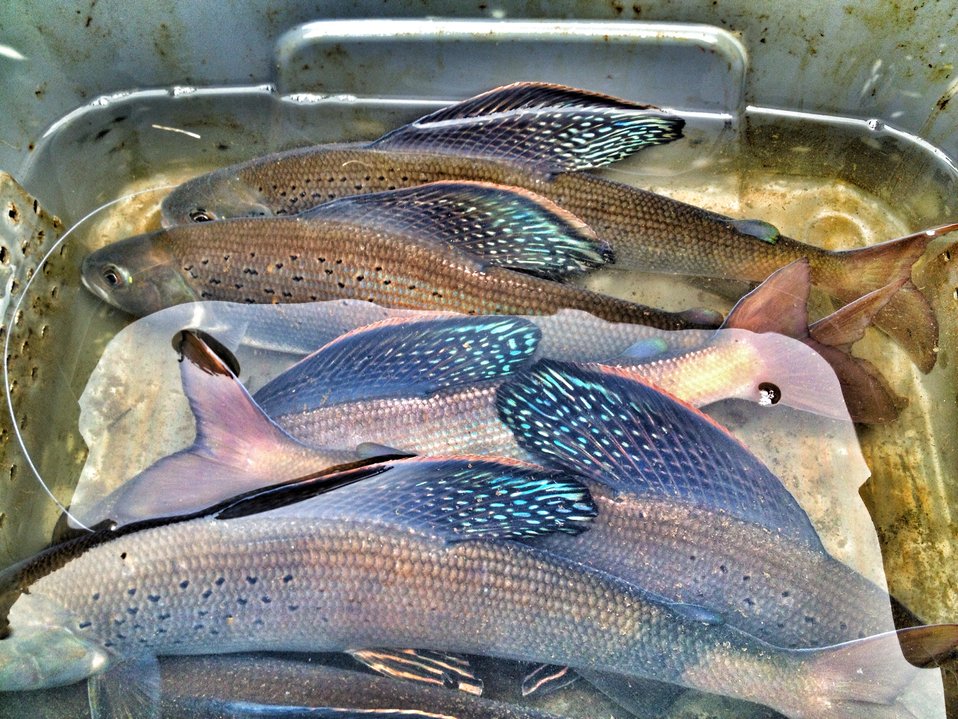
A tub-o-beauty...

These amazing fish are Arctic Grayling collected in our fish trap during the 2013 monitoring season.

The sampling and monitoring methods utilized by Montana Fish and Wildlife Conservation Office employ a full-channel seasonal weir to temporarily detain migrating fish allowing us to assess fish population trends.

This trapping effort is located on Red Rock Creek, Red Rock Lakes National Wildlife Refuge, Montana, and is a collaborative effort among Refuges and Fish and Aquatic Conservation; sister divisions of the US Fish and Wildlife Service.